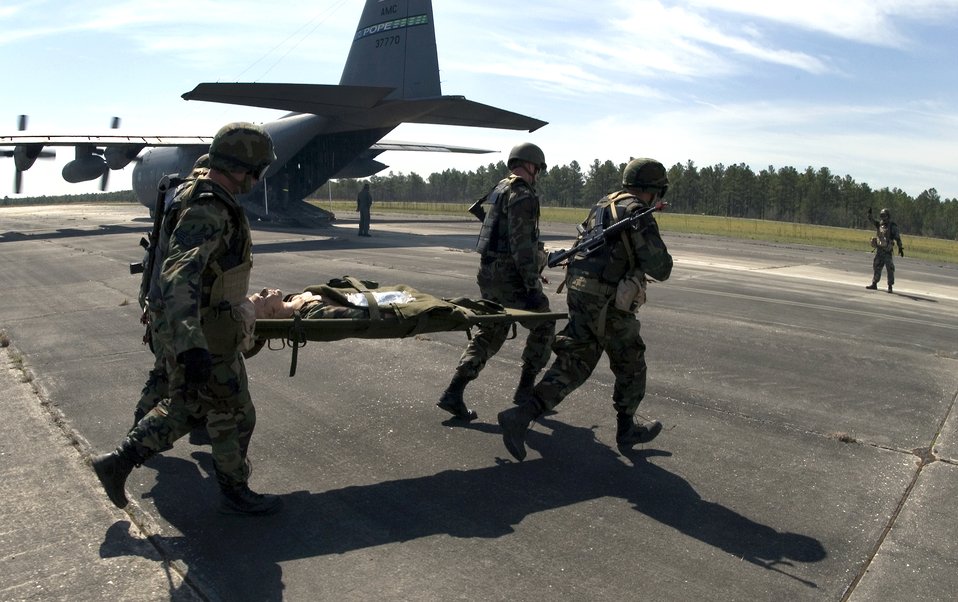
Airmen train for air evac

Medics with the 43rd Air Evacuation Squadron at Pope Air Force Base, N.C., transport a patient onto an awaiting C-130 Hercules on Thursday, April 6, 2006. The 43rd is conducting annual medical field training to prepare squadron members for real world deployments.